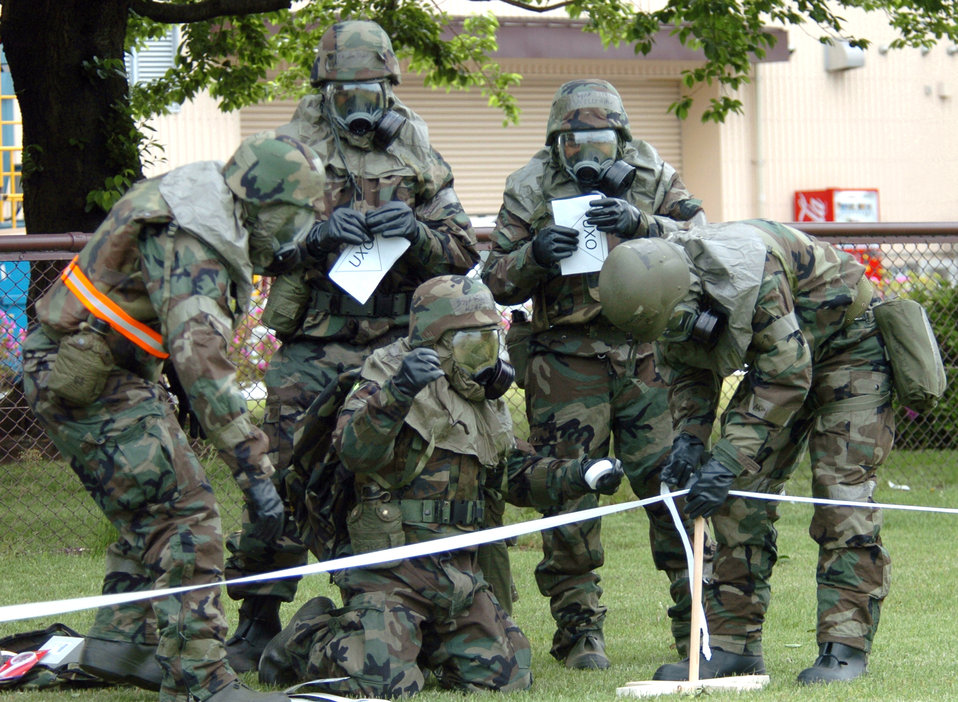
Civil engineers train for chemical attacks

YOKOTA AIR BASE, Japan -- Airmen from the 374th Civil Engineer Squadron secure a